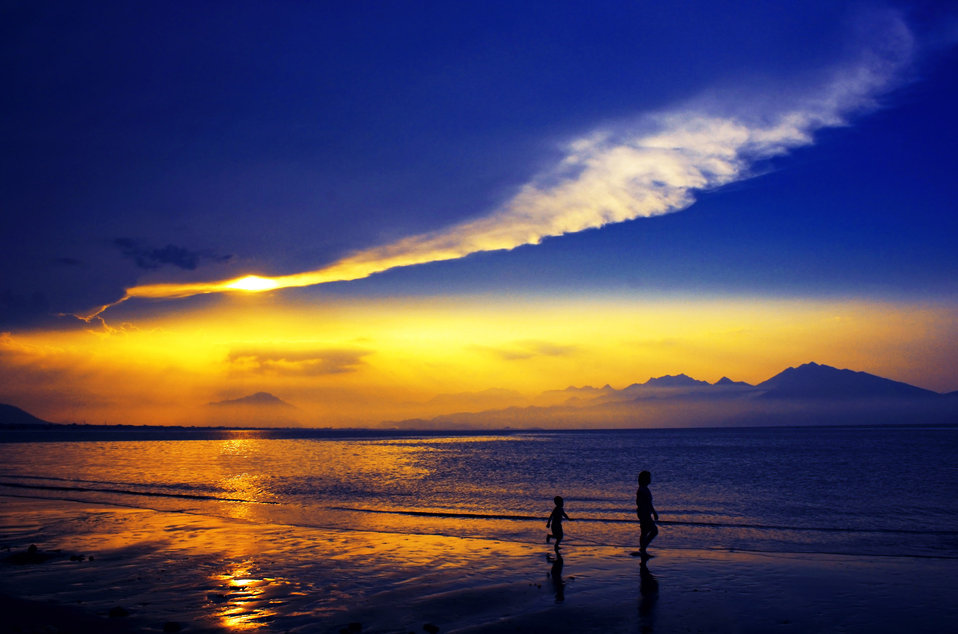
Mother and son

Sunset on the bay of danang, central vietnam..